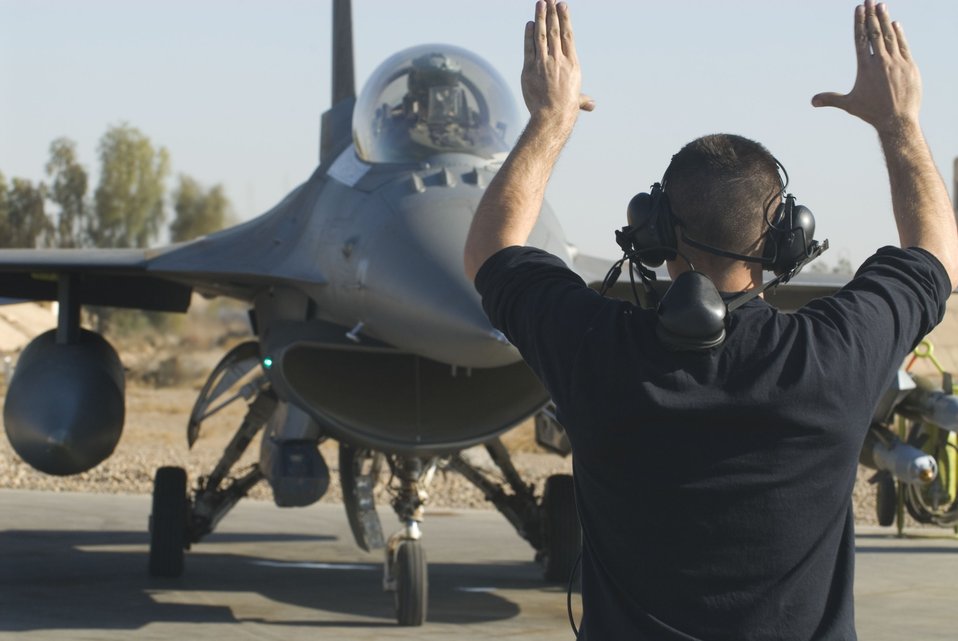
Preparing to launch

Staff Sgt. William Howe signals Capt. Travis Keenan that it is clear to taxi out to the runway Dec. 17 at Balad Air Base, Iraq. From preflight inspection through the taxing out of the aircraft, pilot and crew chief stay in constant communication via radio headset or hand signals. Sergeant Howe, a 332nd Expeditionary Aircraft Maintenance Squadron crew chief, and Captain Keenan, a 22nd Expeditionary Fighter Squadron pilot, are deployed from Spangdahlem Air Base, Germany.